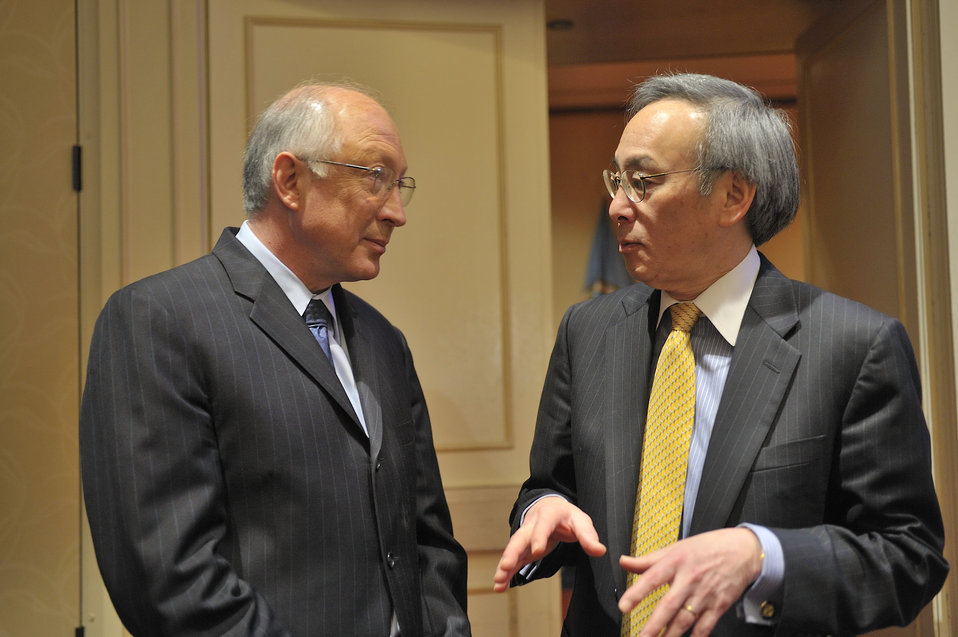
Tribal Energy Summit

DOI Secretary Ken Salazar and DOE Secretary Steven Chu during DOE Tribal Summit May 5th 2011.